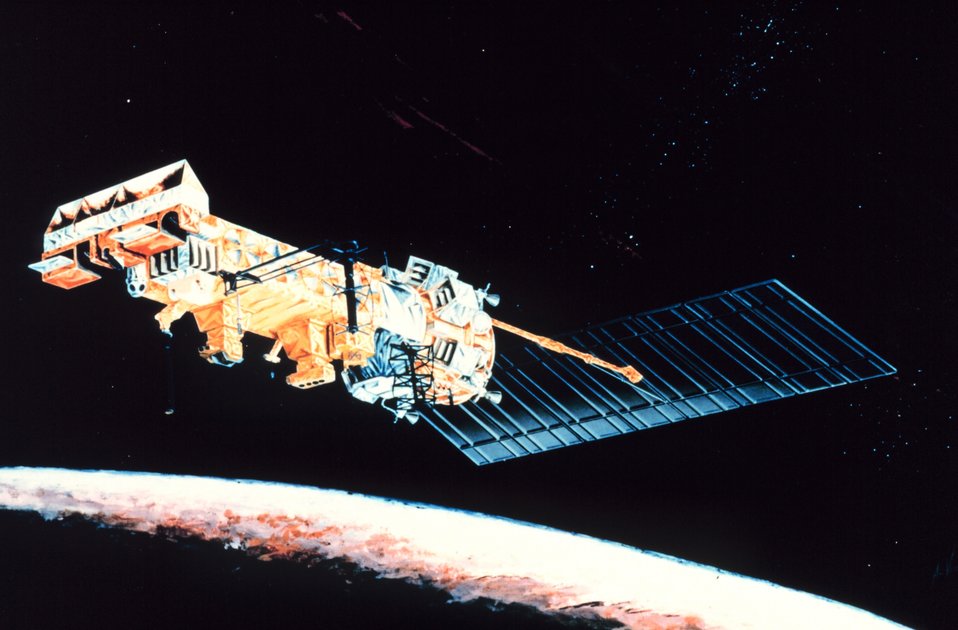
Graphic of TIROS-N circling the Earth.